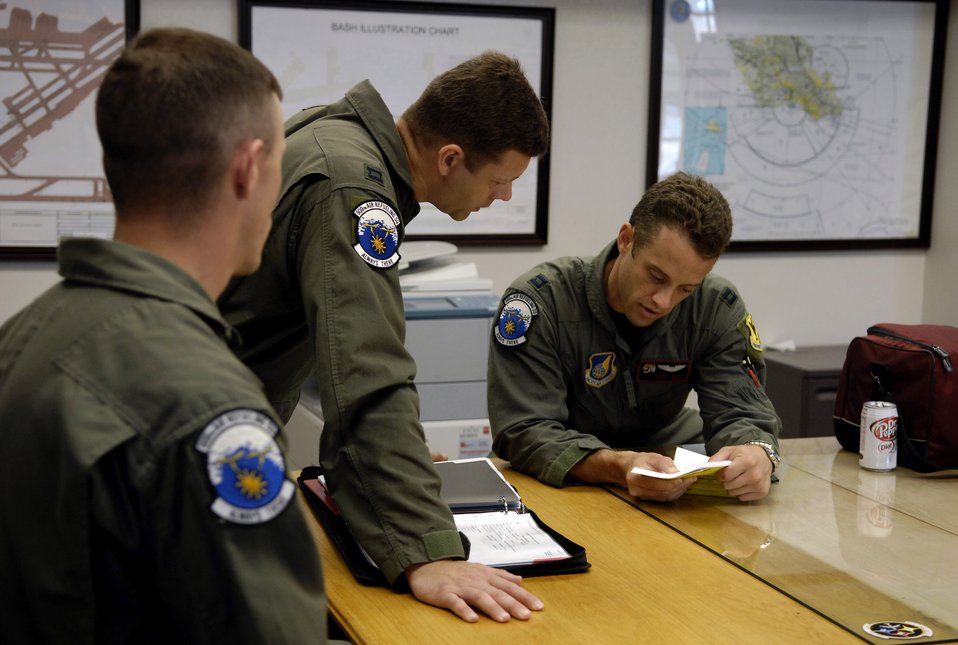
KC-135, C-17 crews rendezvous for refuel readiness

C-17 Globemaster III aircrew members conduct a flight briefing prior to departing June 18 on a refueling training mission at Hickam Air Force Base, Hawaii. A KC-135 Stratotanker from the 18th Wing at Kadena Air Base, Japan is at Hickam AFB practicing with a Globemaster crew from the 535th Airlift Squadron for the Air Mobility Command Rodeo. The Airmen are with the 909th Air Refueling Squadron.